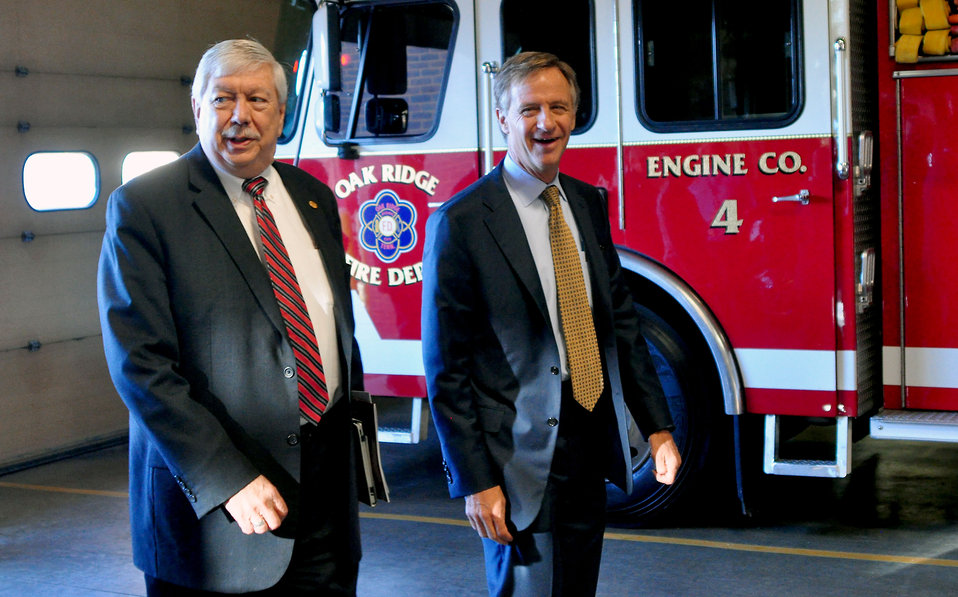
Gov. Bill Haslam Visit to ETTP 2014 Oak Ridge

14-037 DOE photo Lynn Freeny 3-21-2014 Oak Ridge Tennessee